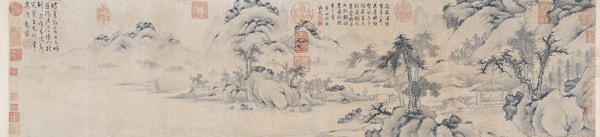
'Returning from a Visit', hand scroll by Zhu Derun